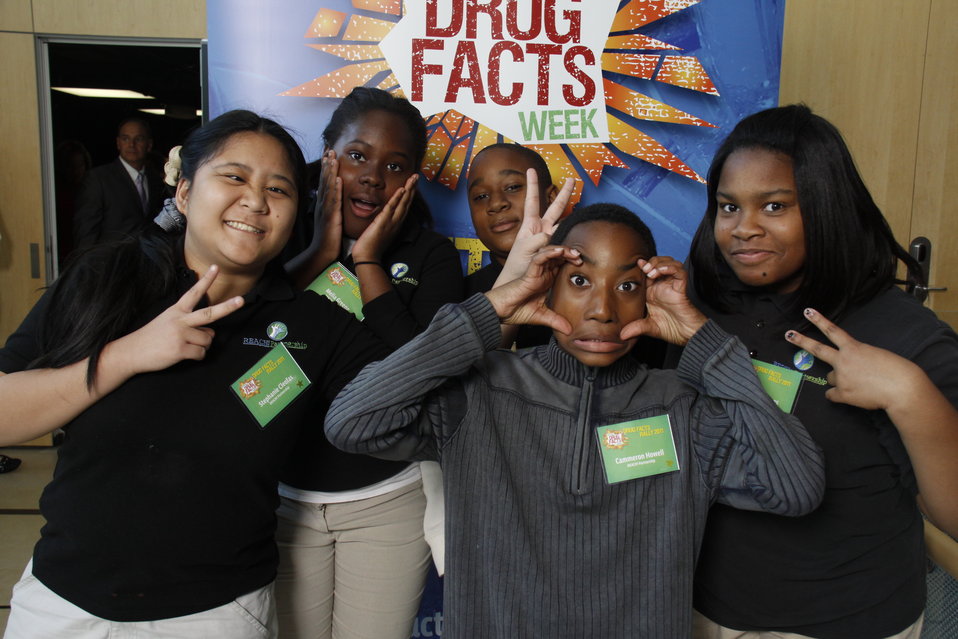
NDFW Mentor Event